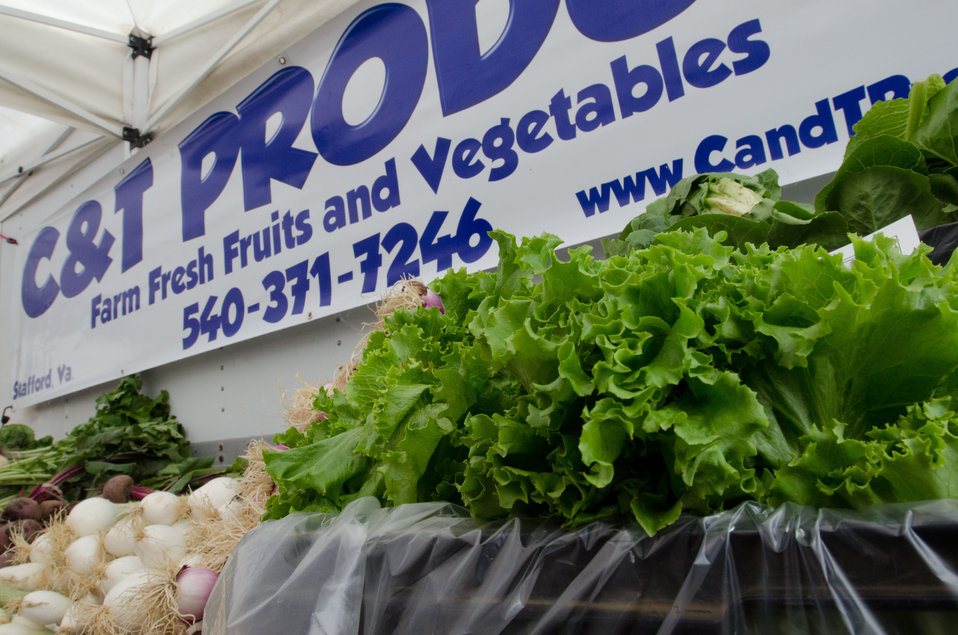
Fresh vegetables from C & T Produce at the U.S. Department of Agriculture (USDA) summer farmers market opening of the 17th season at the USDA Whitten Building east parking lot in Washington, D.C., on Friday, May 31, 2012. This year's theme is Grow, Healthy, Eat Healthy & Be Healthy. USDA and Fuel Up to Play 60, in partnership with the National Dairy Council and the National Football League, invited residence, visitors and local school children to participate in opening day activities. Hip Hop Public Health featuring Easy A.D. from Cold Crush Brothers and disk jockey Artie Green play music and invite people to get up on stage to dance or hula hoop to get active. D.C. Truck Farm help people know from what plants, that certain herbs, fruit and produce come from by giving tail-gate tours of the garden growing in the bed of their pickup truck. The Peoples Garden Initiative and USDA Executive Master Gardeners gave away a variety of fruit and produce seedlings to include the Tomato ‘Abraham Lincoln’ in celebration of the USDA 150th Anniversary and to share their harvest. New features for 2012 include an on-site sign language interpreter, a hand washing station, and a USDA-certified organic vendor. Other products selling today are fresh fruits, vegetables, herbs, baked goods, meats, kettle popcorn, local honey, hand-made soap and more.